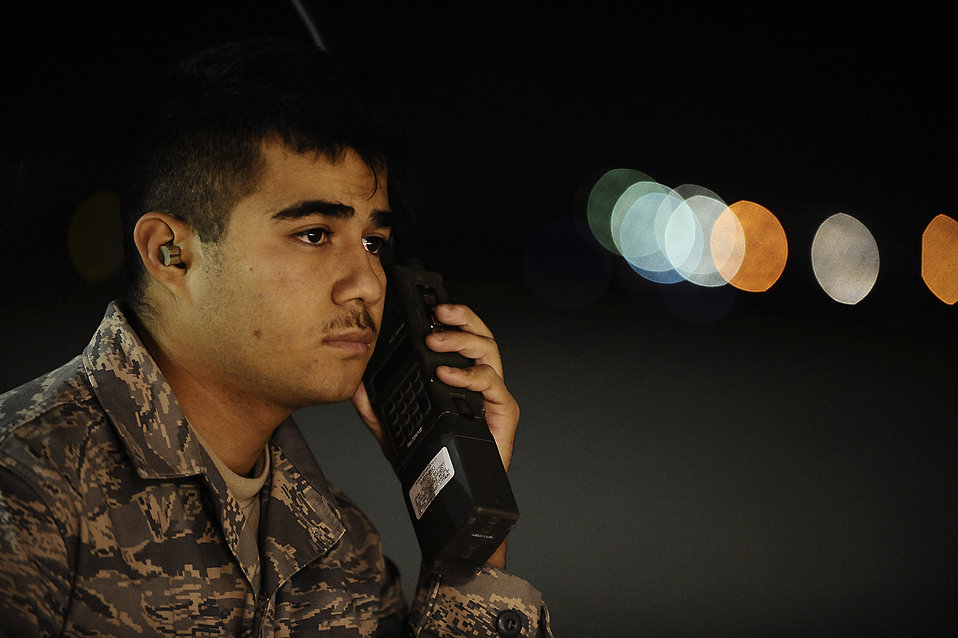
First Reaper aircraft maintenance unit deploys to Balad

Airman 1st Class Hugo Garnica communicates with an MQ-9 Reaper pilot using a land mobile radio at Joint Base Balad, Iraq, Nov. 18. He was performing a preflight check to ensure the unmanned aircraft vehicle was operational. Airman Garnica, an assistant dedicated crew chief assigned to the 332nd Expeditionary Aircraft Maintenance Squadron, is deployed from Creech Air Force Base, Nev.